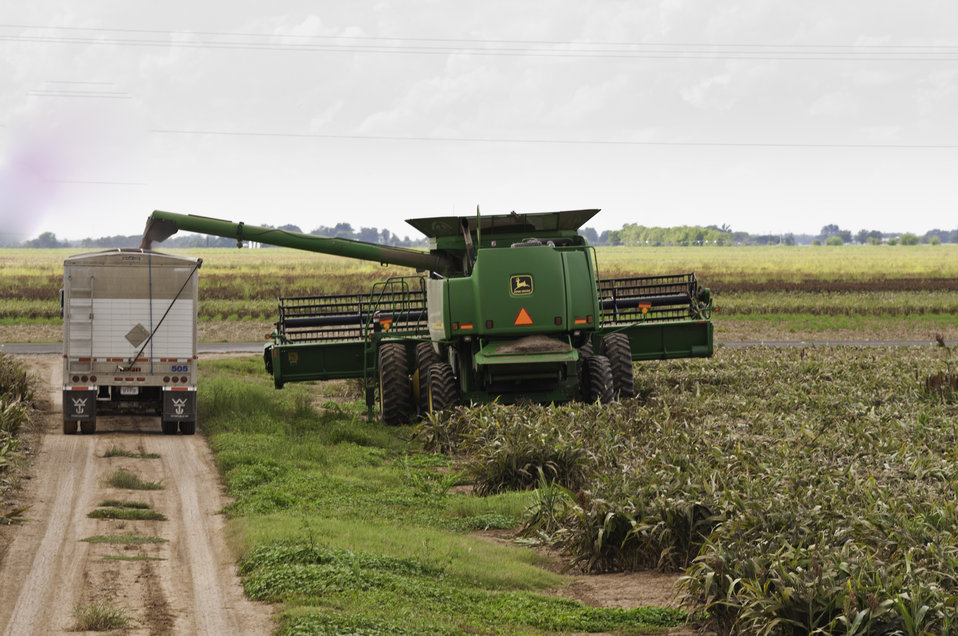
Grain sorghum is harvested on the Wilder Farms in Navasota, TX on Aug. 23, 2013.